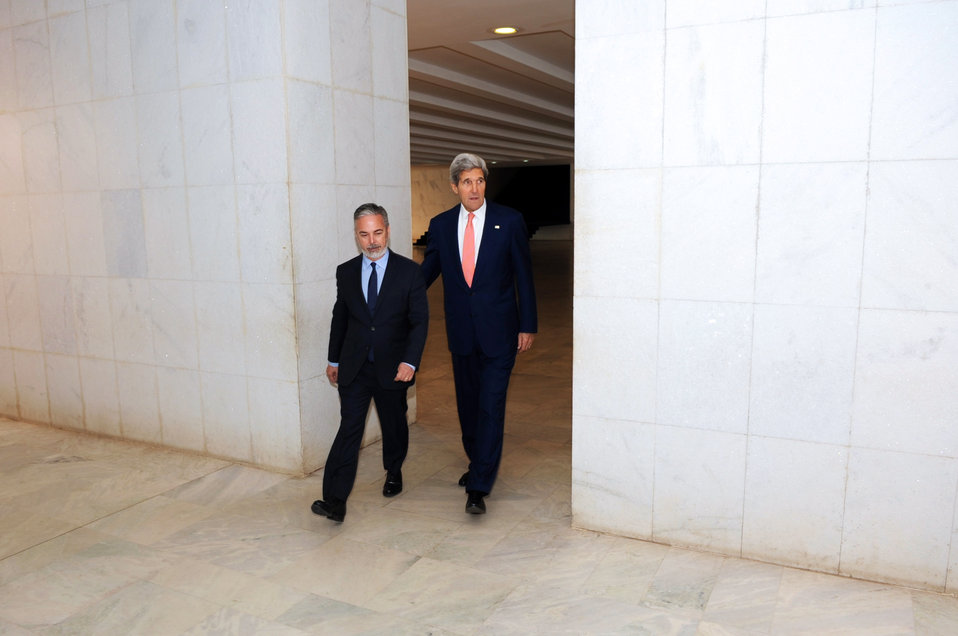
Secretary Kerry Meets With Brazilian Foreign Minister Patriota

Brazilian Foreign Minister Antonio Patriota escorts U.S. Secretary of State John Kerry as they walk through the Itamaraty Place, the country's Ministry of Foreign Affairs, before their meeting in Brasilia, Brazil, on August 13, 2013.